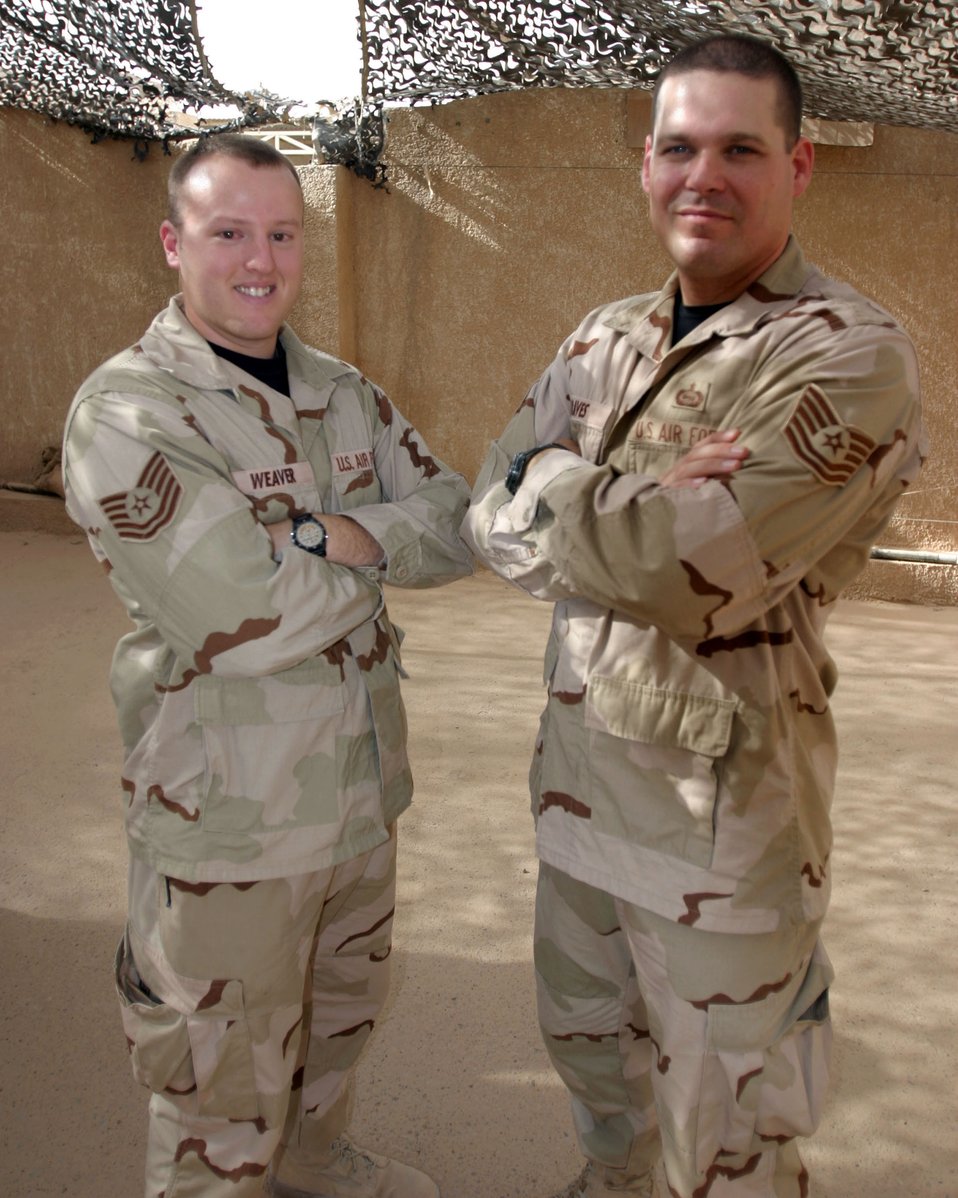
Airmen pull duty with Marines

IRAQ -- Tech. Sgts. Carl Weaver (left) and Jason Graves are deployed supporting the Marine Multinational Force-West's command operations center. They are the first enlisted Airmen to be assigned to the center. They are from Barksdale Air Force Base, La.